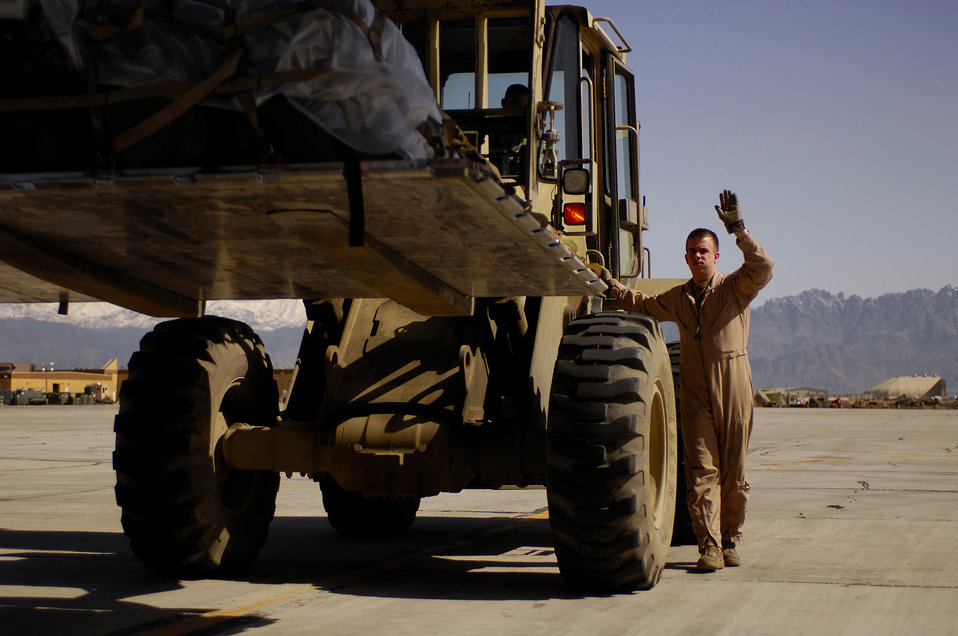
Delivering the goods

Staff Sgt. Brian Kinner directs the forklift towards the C-130 Hercules for another mission April 16 at Bagram Air Base, Afghanistan. Sergeant Kinner is a loadmaster assigned to the 774th Expeditionary Airlift Squadron and deployed from the 105th Airlift Squadron from Nashville, Tenn.